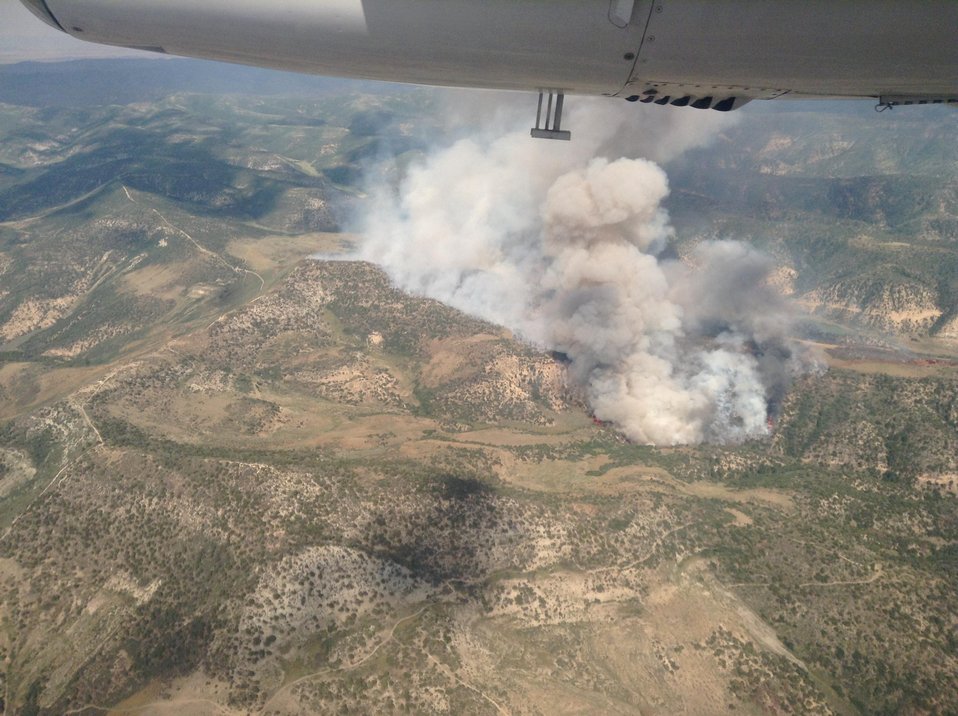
The Citadel Fire located 40 miles Northwest of Meeker, CO began on Jul. 26, 2013 by a lightning strike and has consumed approximately 1, 818 acres. The fire is approximately 10 % contained.